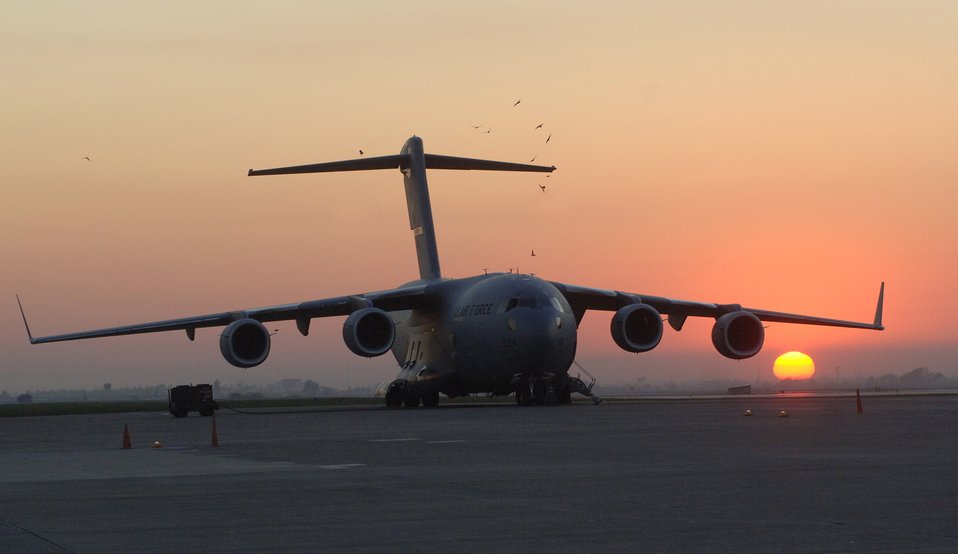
Active flightline

A C-17 Globemaster III sits on the runway moments before takeoff at Incirlik Air Base, Turkey, Nov. 16. More than half of all air cargo delivered to support Operation Iraqi Freedom is processed through here. Due to the close proximity of Incirlik to Iraq and the ability to land at more and smaller runways, flights from here have kept at least 3,300 convoy trucks and 9,000 servicemembers from harm's way.